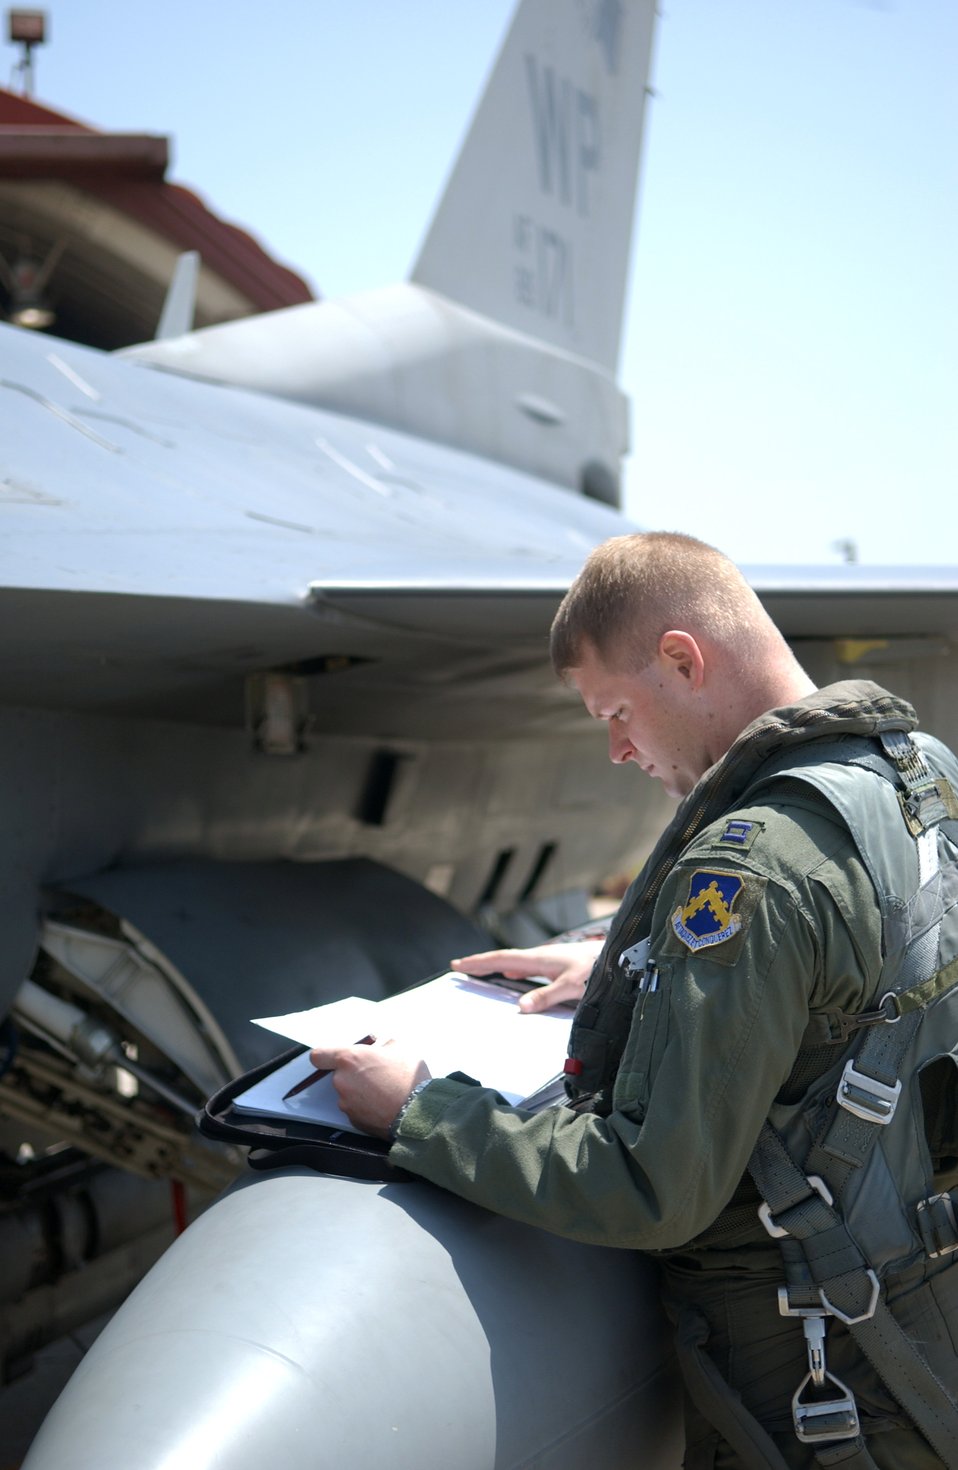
Falcons soar over South Korea

Capt. Lynn Savage reviews the maintenance log of an F-16 Fighting Falcon before a training mission on Friday, April 28, 2006. Captain Savage is assigned to the 35th Fighter Squadron at Kunsan Air Base, South Korea.